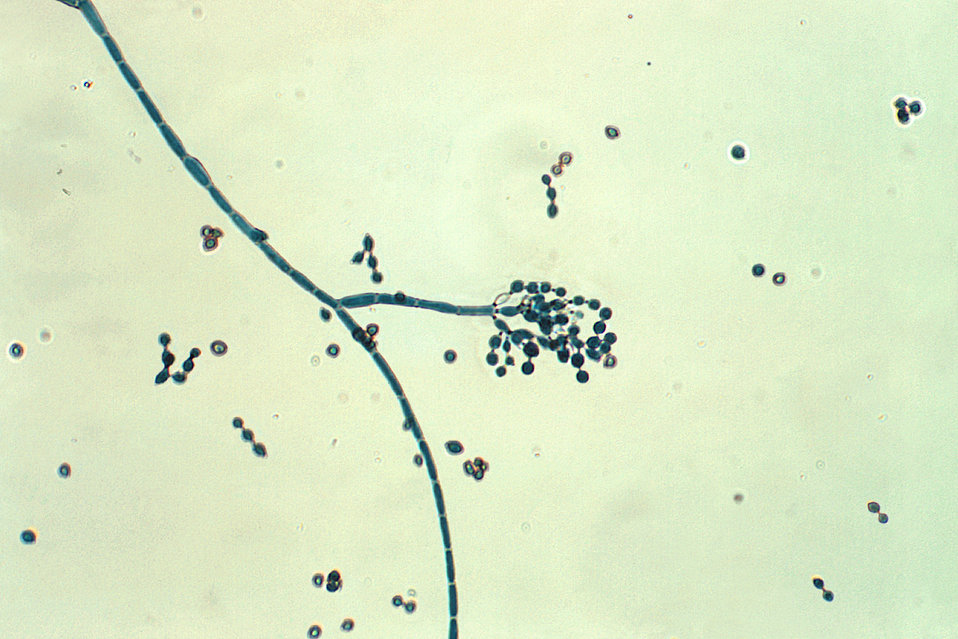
Magnified 400X, this photomicrograph revealed some of the ultrastructural morphology displayed by a cluster of Cladosporium herbarum conidia.